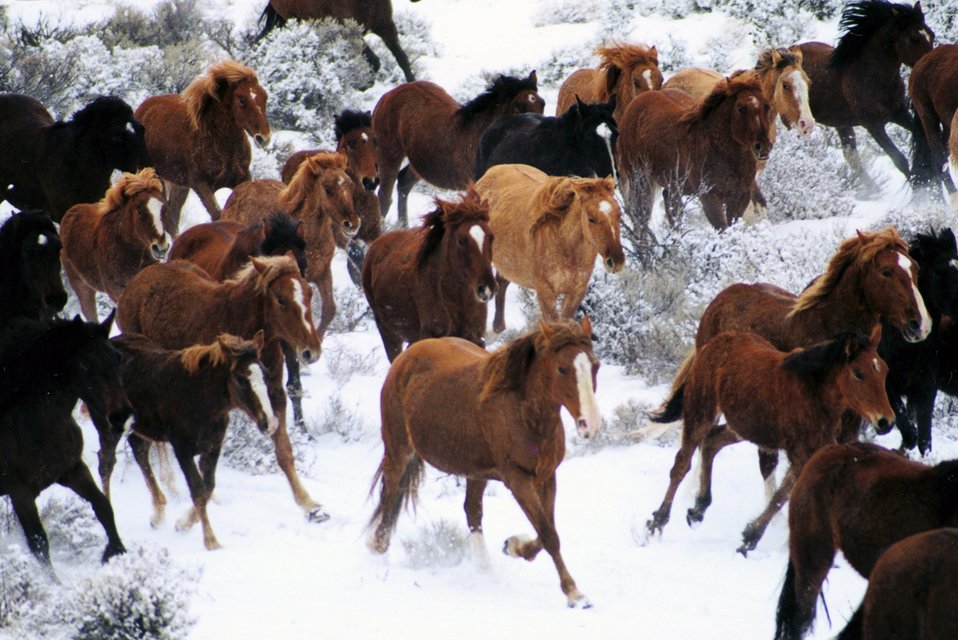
Alvord-Tule Wild Horse Management Heard Area.